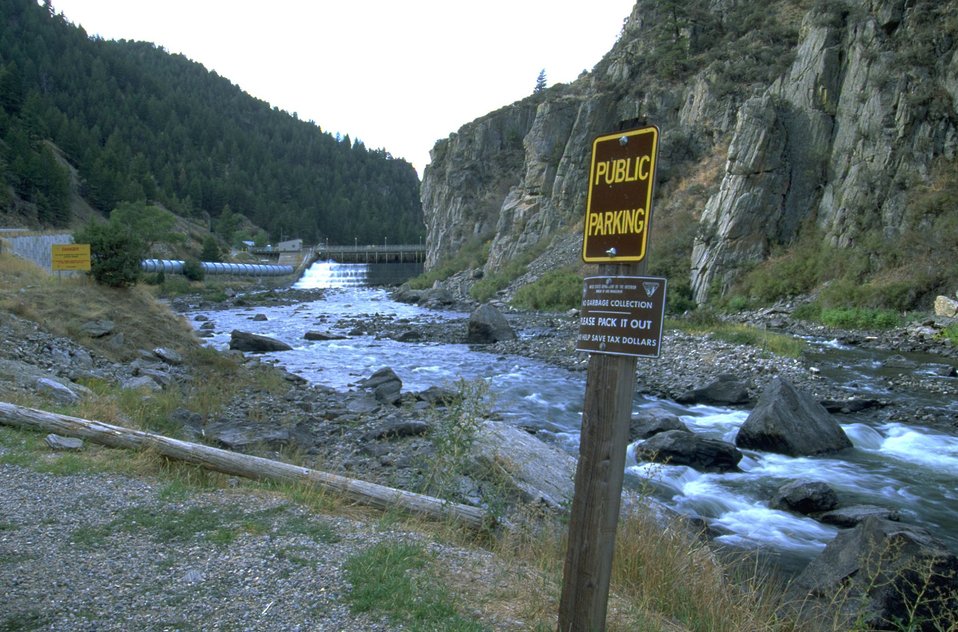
Madison Dam - Kayakers ""Parking Lot""